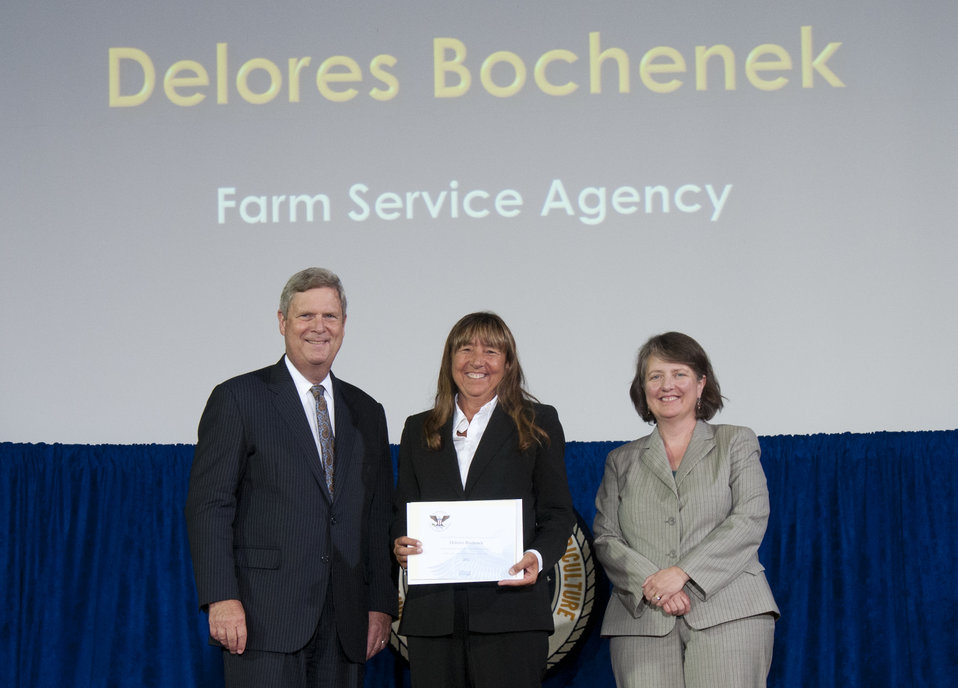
Agriculture Secretary Tom Vilsack and Agriculture Deputy Secretary Kathleen Merrigan present the President’s Volunteer Service Award to Farm Service Agency (FSA) employee Delores Bochenek at the U.S. Department of Agriculture (USDA) 64th Annual Honor Awards Ceremony in Washington, D.C. on Wednesday, Sept. 12, 2012. The President’s Call to Service Award is presented to an employee who has served 4,000 hours or more of service with a qualifying organization over the employee’s lifetime.